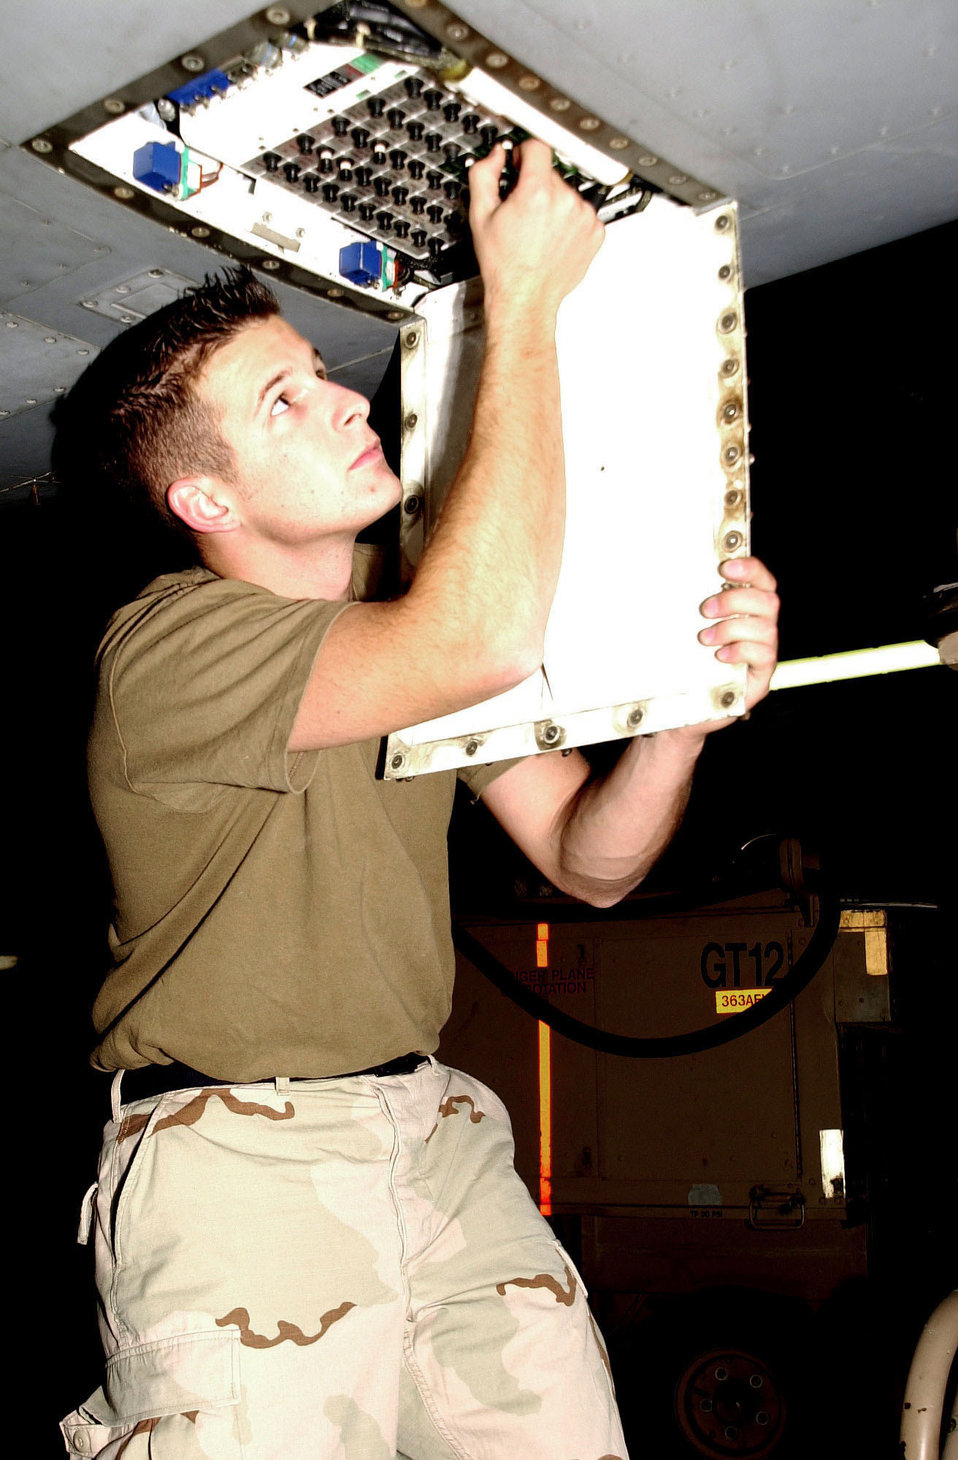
When all else fails, egress prevails

SOUTHWEST ASIA -- Airman 1st Class Jason Bowers resets the circuit breakers for an ejection seat in an F-16 Fighting Falcon here. Seat circuit breakers are pulled to restrict accidental activation of the seat actuator when the seat is raised for maintenance and prevent damage to the seat or other equipment. Airman Bowers is an egress systems apprentice assigned to the 379th Expeditionary Maintenance Squadron.